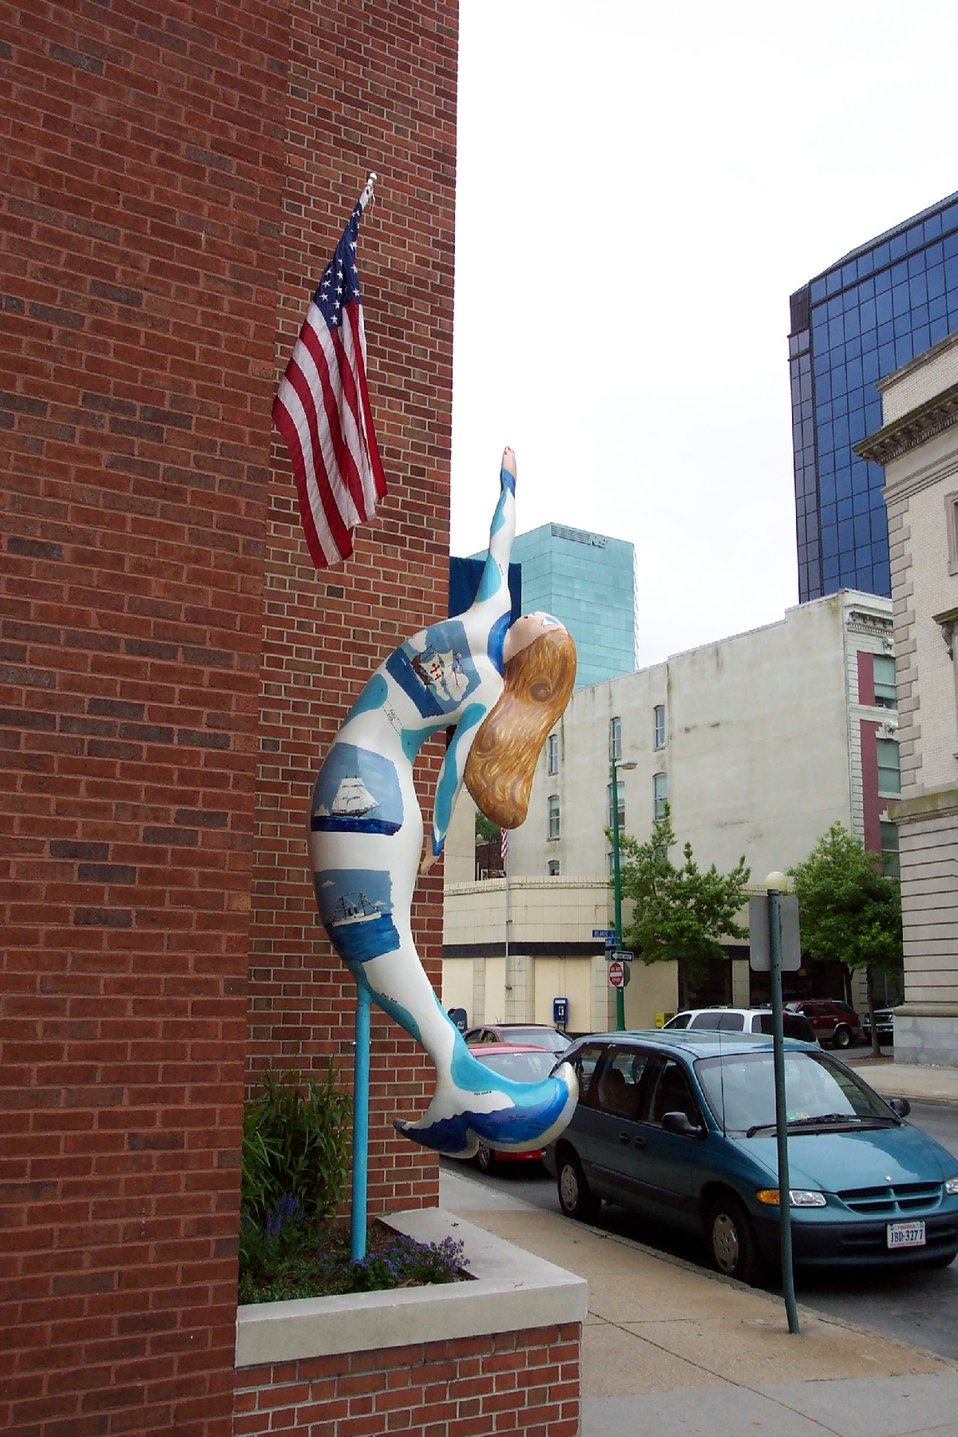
'Ships Ahoy.' A Norfolk mermaid.